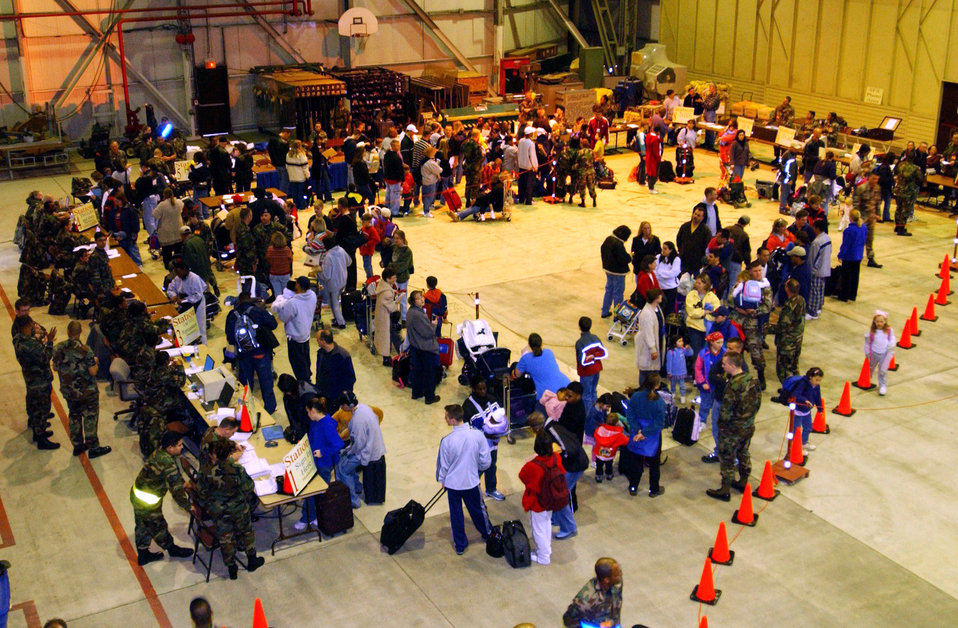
Processing line

INCIRLIK AIR BASE, Turkey -- Family members of 39th Wing airmen go through a processing line March 19 as part of Incirlik's voluntary dependent relocation. Representatives from various base agencies helped approximately 320 dependents leave the base. The first aircraft left Incirlik at 4:30 p.m. March 20.